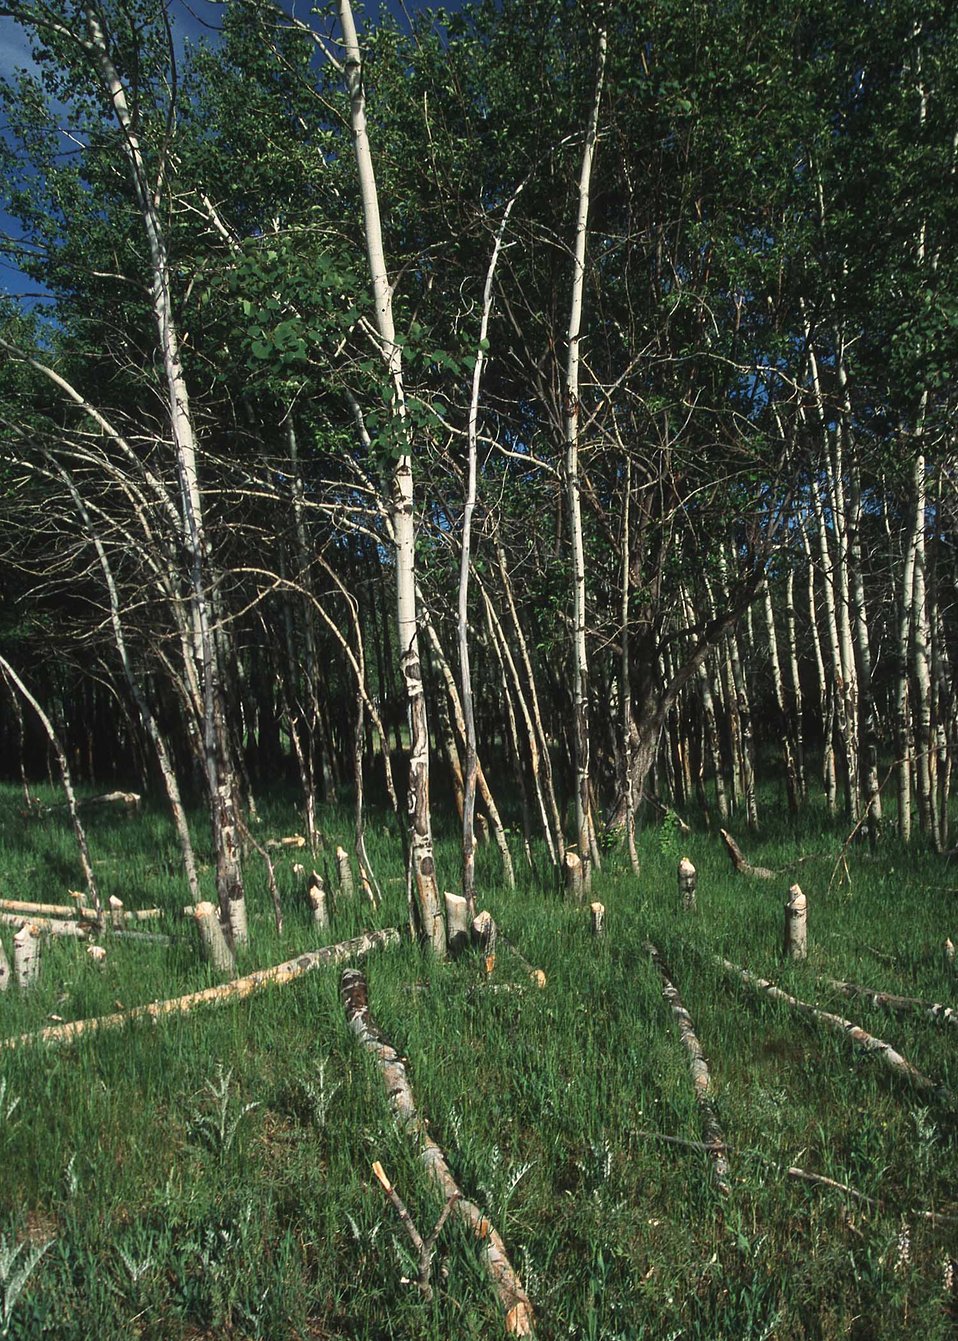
Beaver Activity on McGregor Ranch, CO.